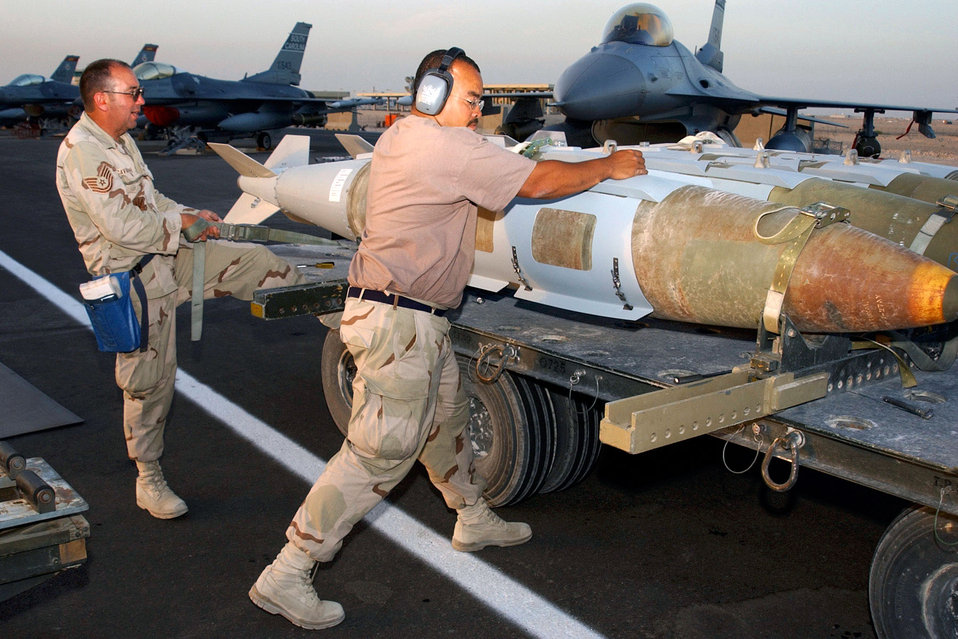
Heavy duty bomb

OPERATION IRAQI FREEDOM (AFPN) -- GBU-31A bombs are being loaded onto a F-16CJ fighter of the 157th Expeditionary Fighter Squadron. Tech. Sgt Anthony King (right) and Tech. Sgt Art Cavannaugh, weapons technicians from the 157th Aircraft Maintenance Unit, prepare a bomb for loading. The 157th EFS and the 157th AMU are assigned to the 379th Air Expeditionary Wing. The 379th AEW is a forward deployed unit in Southwest Asia, supporting Operation Iraqi Freedom. Both units are deployed from the South Carolina Air National Guard of the 169th Fighter Wing.